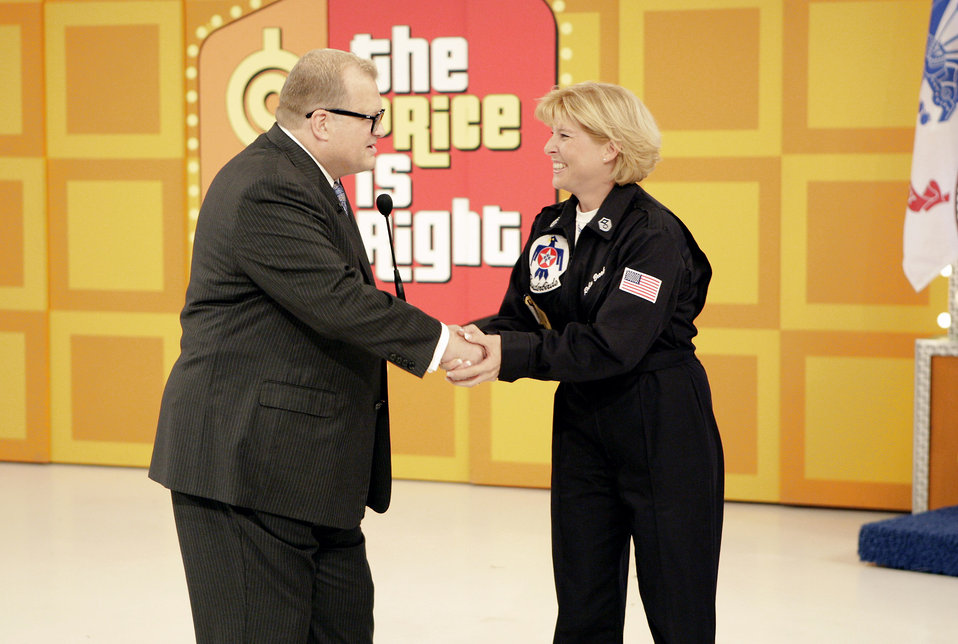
Servicemembers saluted on 'The Price is Right'

Master Sgt. Robin Brooks meets Drew Carey during a